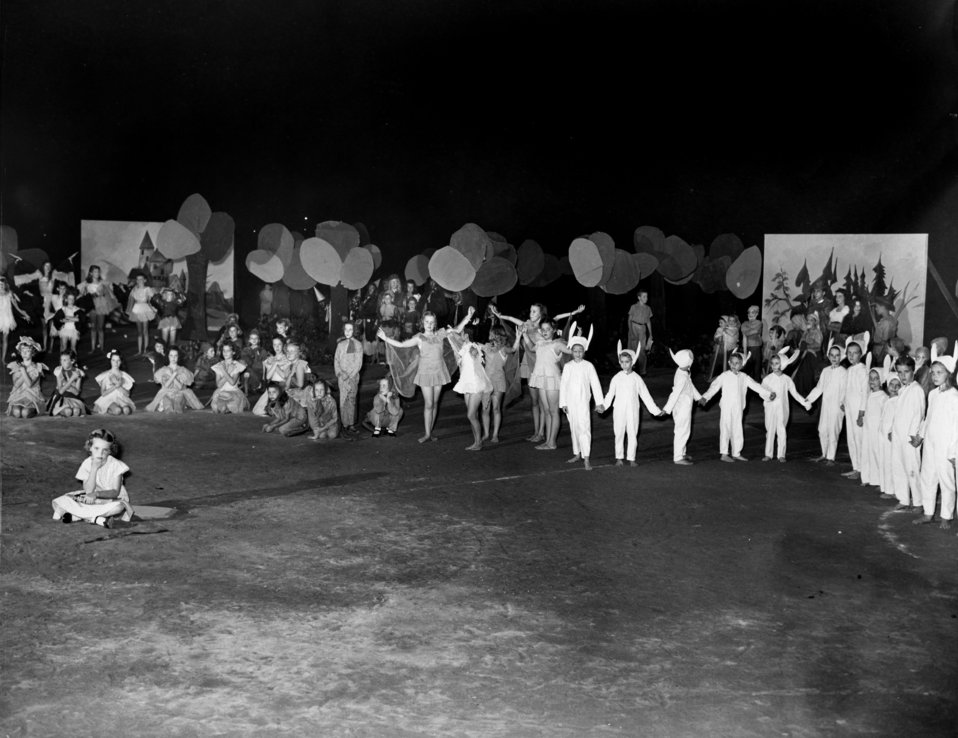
'Snow White' playground Pageant Oak Ridge 1948

5178-3 DOE photo Ed Westcott 8-19-1948 Oak Ridge Tennessee